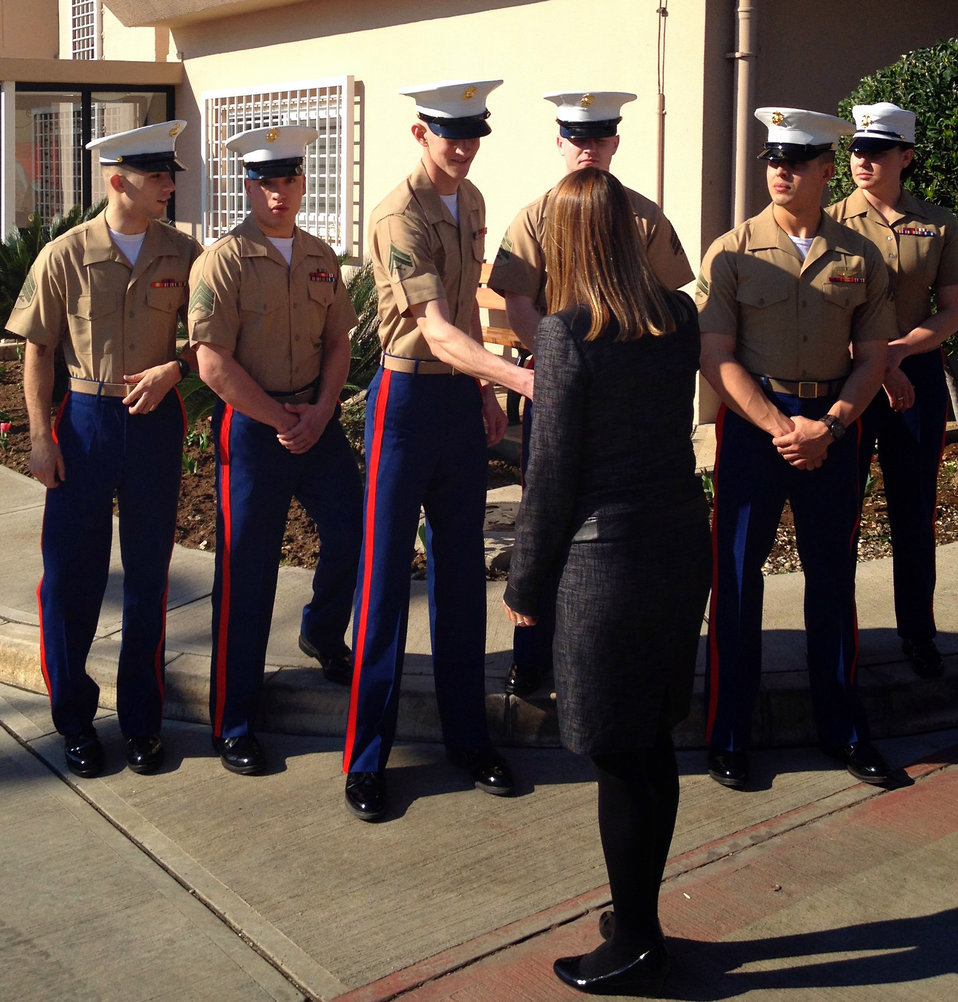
Deputy Secretary Higginbottom Greets Marine Security Guards

Deputy Secretary of State for Management and Resources Heather Higginbottom greets new Marine Security Guards at the U.S. Consulate in Adana, Turkey, on March 21, 2014.